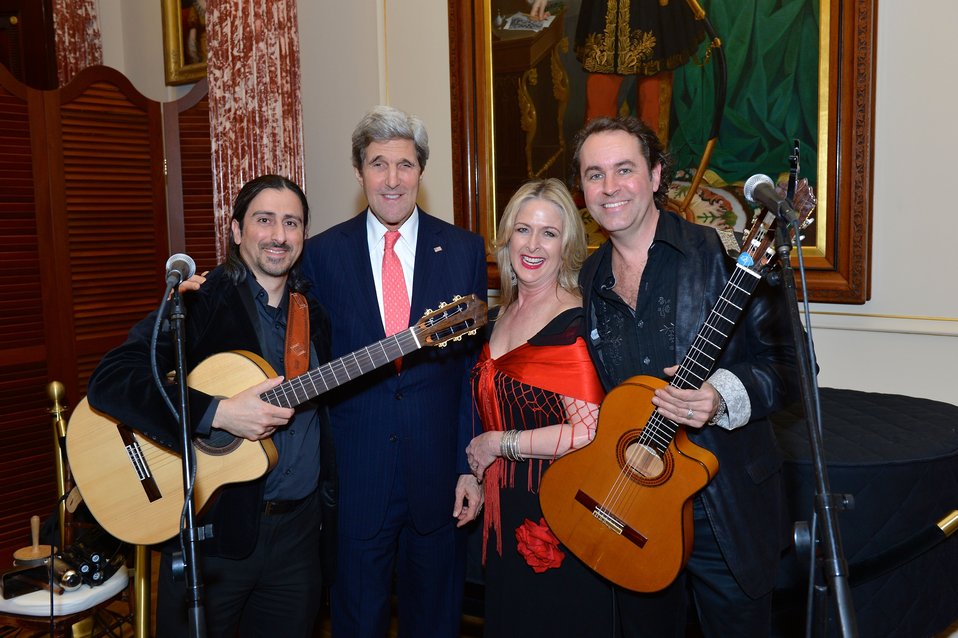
Secretary Kerry Poses for a Photo With 'Trio Caliente'

U.S. Secretary of State John Kerry poses for a photo with 'Trio Caliente' -- a Maryland-based Latin music band led by Michael Bard, who has served as Secretary Kerry's guitar teacher. The band performed at a reception during the Global Chiefs of Mission Conference at the U.S. Department of State in Washington, D.C., on March 11, 2014.